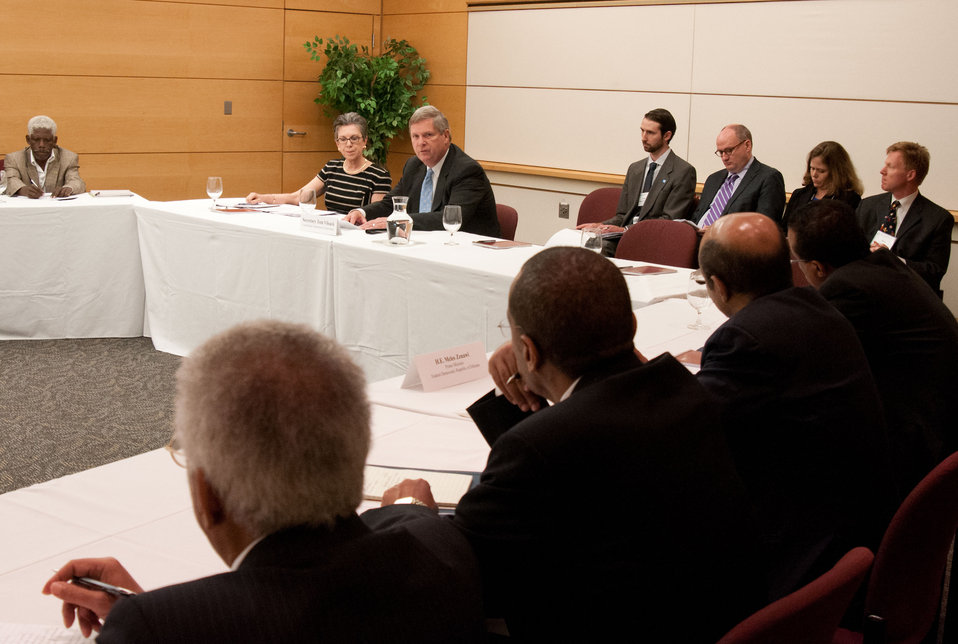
Agriculture Under Secretary for Research, Education and Economics Catherine Woteki and Agriculture Secretary Tom Vilsack make remarks at the African Heads of State conference at the Ronald Reagan Federal Building in Washington, D.C, on Friday, May 18, 2012.